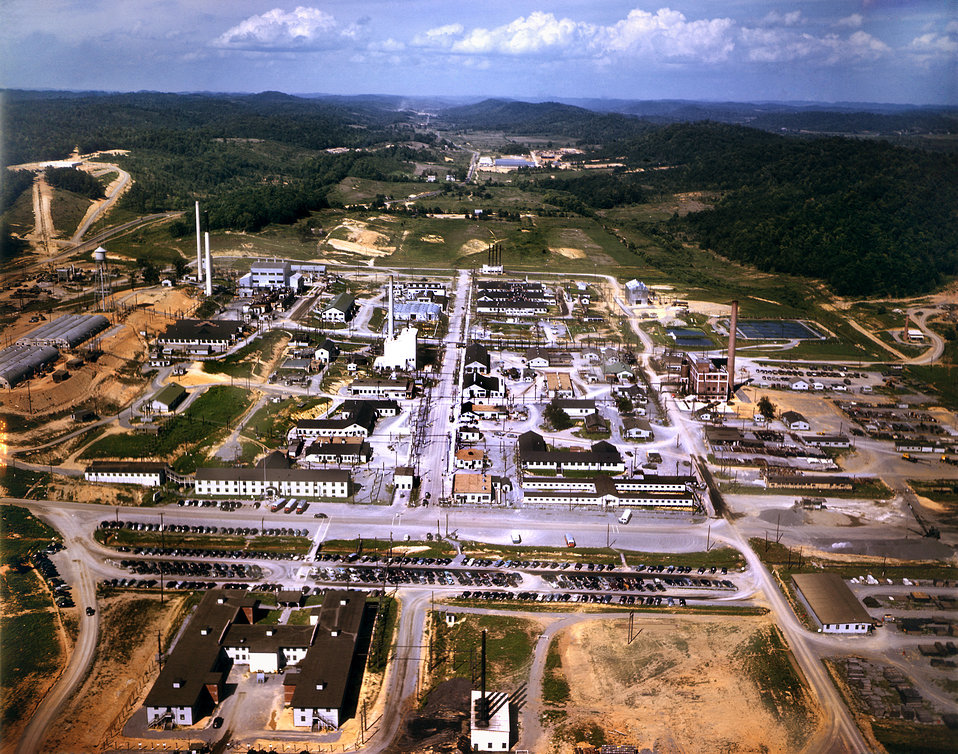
Oak Ridge National Lab.

58-1232 DOE photo by Ed Westcott 1947 Oak ridge Tennessee